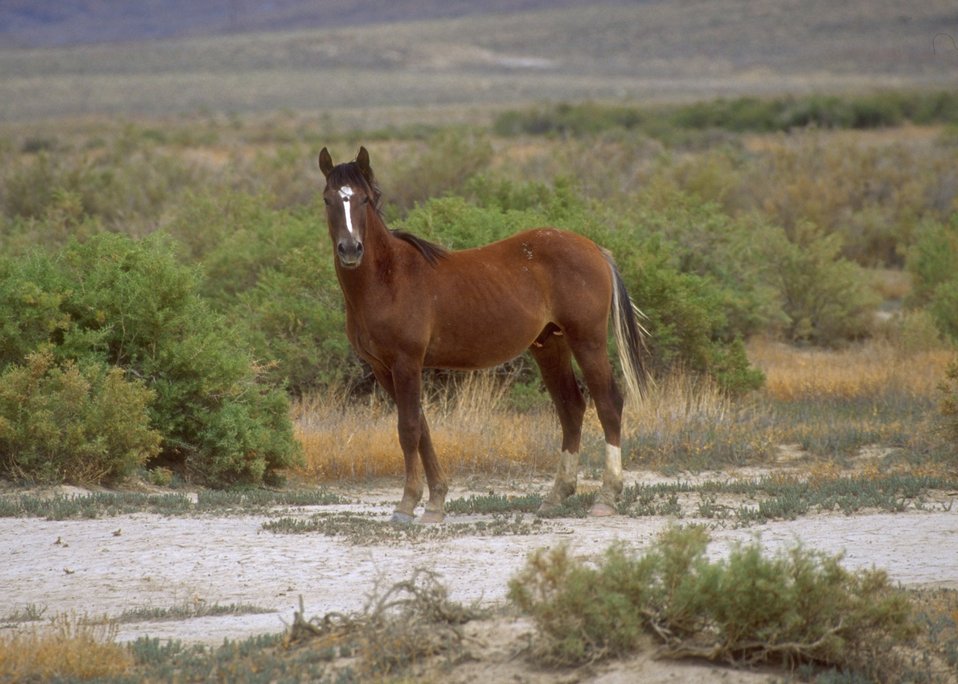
Wild horses, Rock Springs Field Office.